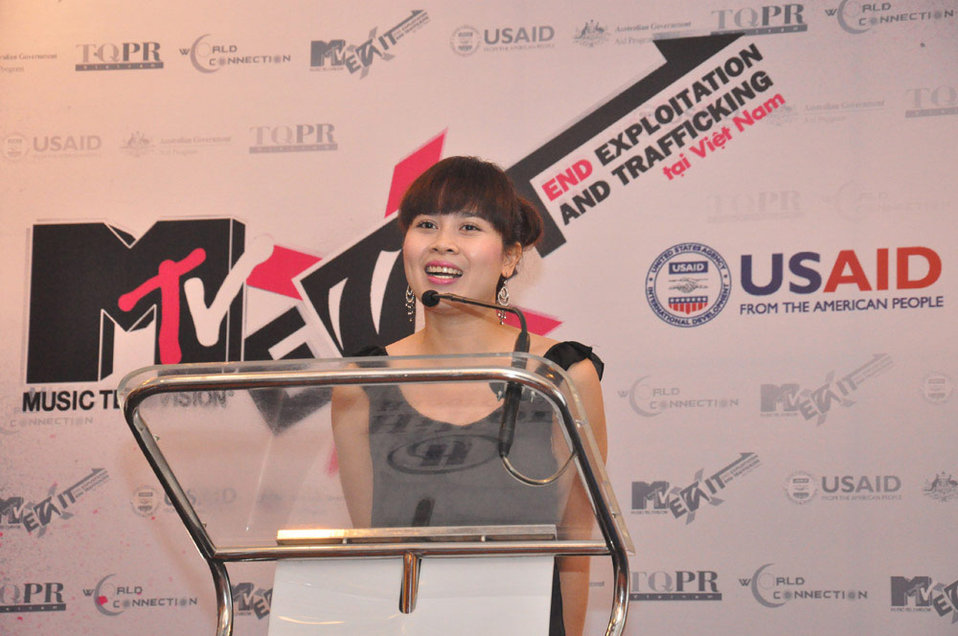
Singer Luu Huong Giang speaks to the media to at the launch of the USAID-sponsored MTV EXIT campaign to fight human trafficking.

USAID, MTV EXIT Press Launch, March 23, 2010